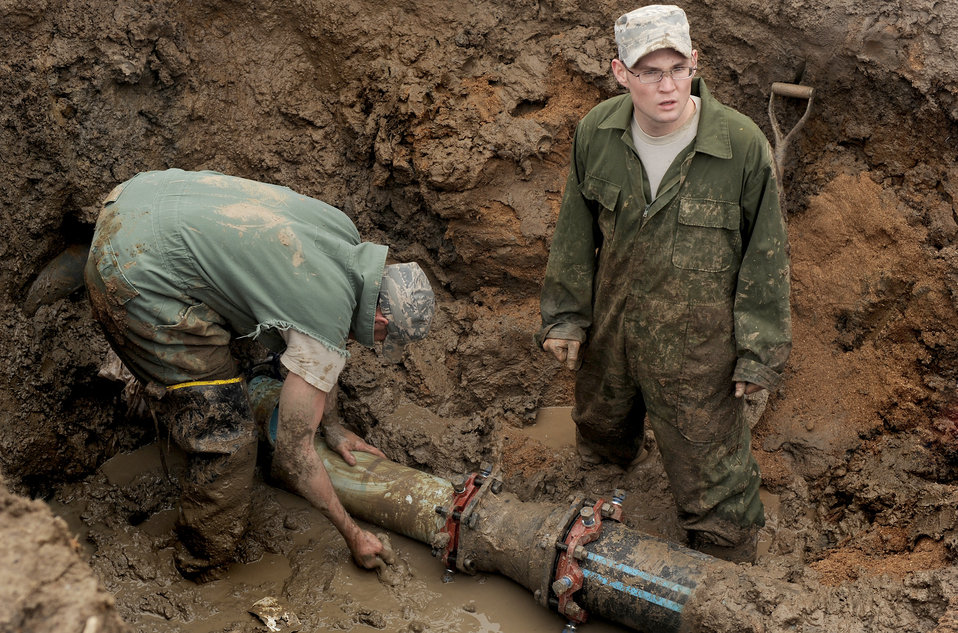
Maintenance specialists

Senior Airman Sean O'Connor (left) and Staff Sgt. Justin England work together to repair a busted water main March 7, 2011, at Whiteman Air Force Base, Mo. Airman O'Connor and Sergeant England are maintenance specialists assigned to the 509th Civil Engineer Squadron.